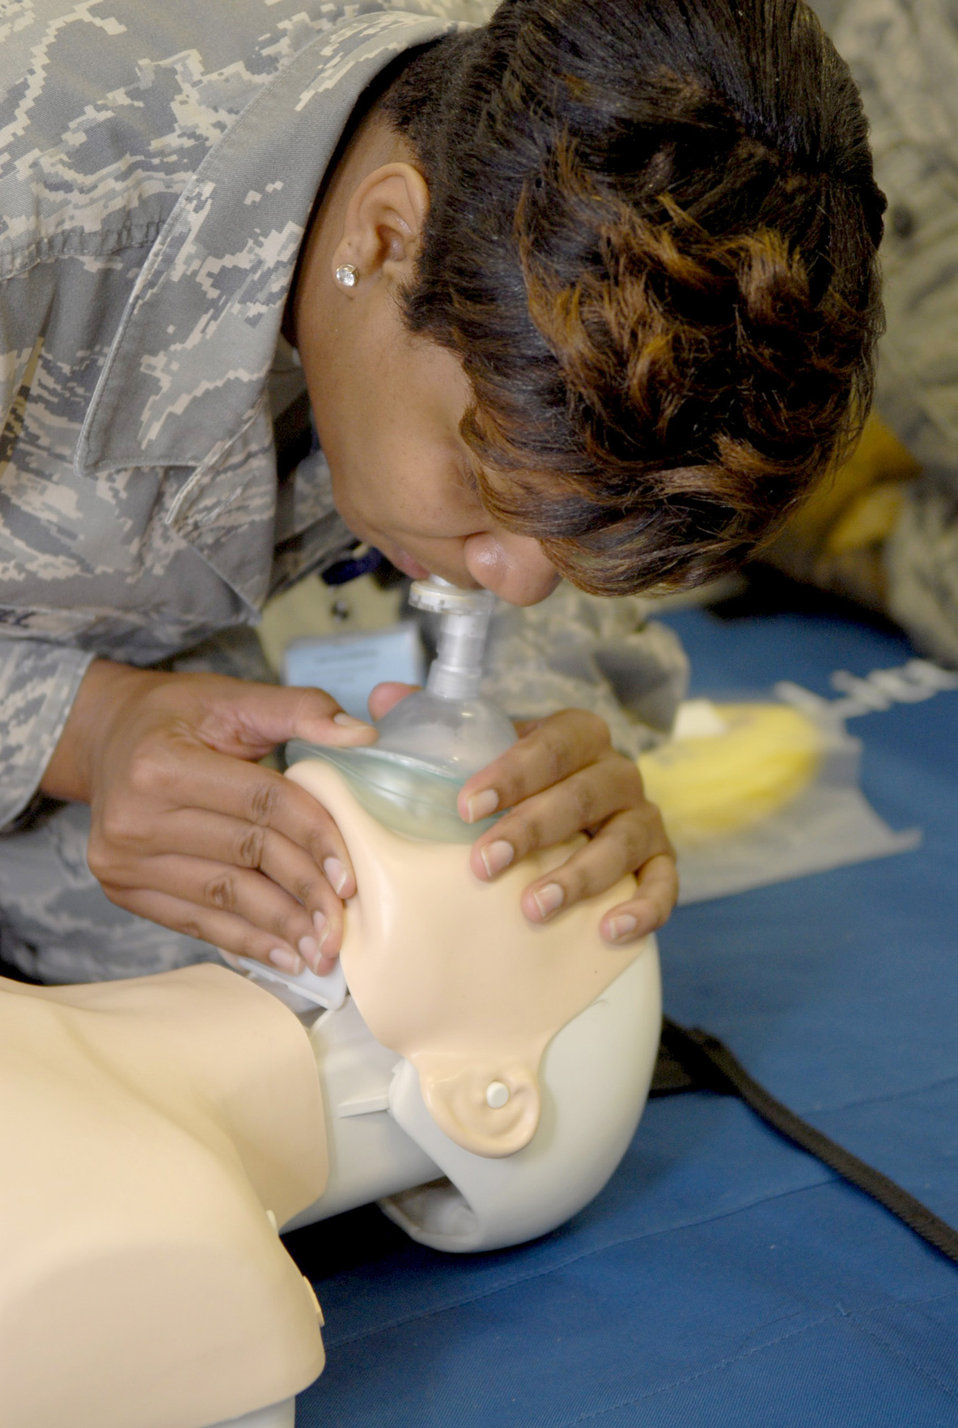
New CPR training wants you to switch your ABCs

Tech. Sgt. Nicole Caldwell practices giving breaths to a CPR dummy April 15, 2011, during a Heartsaver class at Kadena Air Base, Japan. The American Heart Association has updated the CPR technique with the more effective method of administering immediate chest compressions.